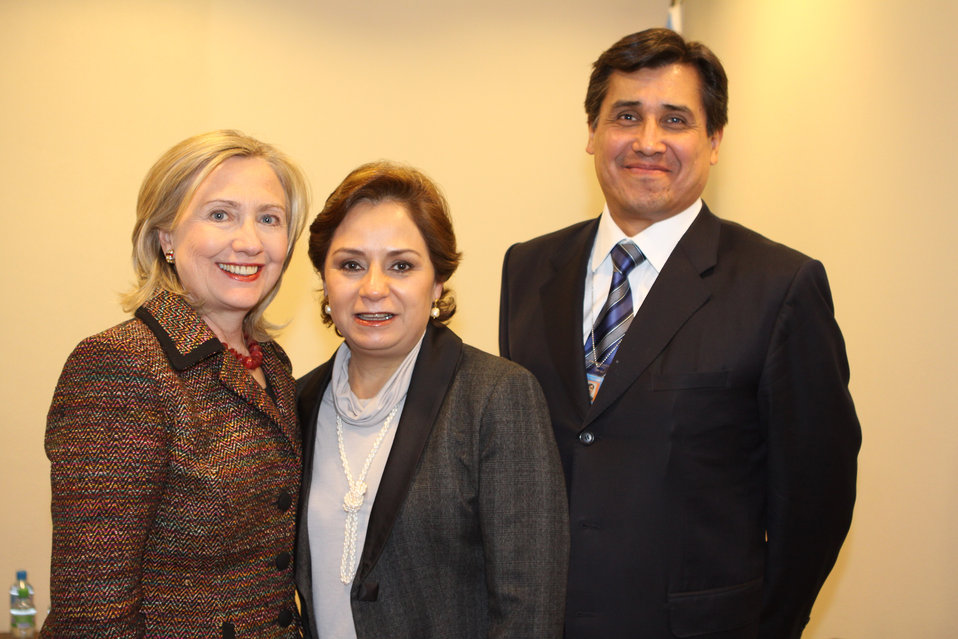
Secretary Clinton Meets With Mexican Foreign Secretary Espinosa and Mexican Permanent Representative Camacho

U.S. Secretary of State Hillary Rodham Clinton meets with Mexican Foreign Secretary Patricia Espinosa and Mexican Permanent Representative to International Organizations Juan José Gómez Camacho at the United Nations Office at Geneva, Switzerland, on February 28, 2011. The meeting took place on the sidelines of the High Level Segment of the Human Rights Council which brought together many foreign ministers in Geneva.